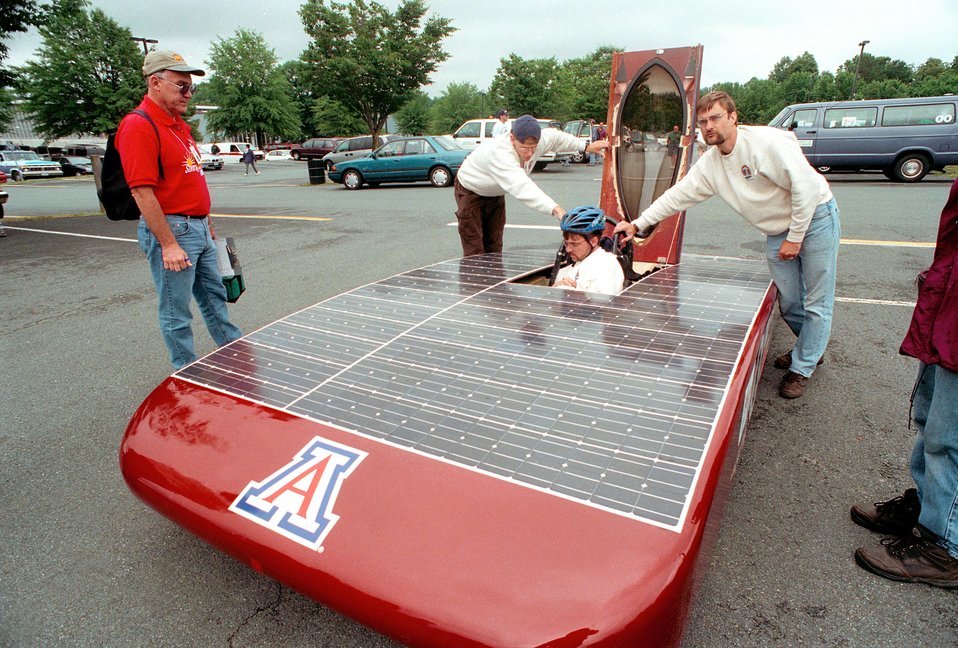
PREPARING FOR SUNRAYCE 1999.

SUNRAYCE 1999 STARTED IN WASHINGTON, DC, JUNE 20, 1999 AND WAS COMPLETED ON JUNE 29, 1999 AT DISNEY WORLD IN FLORIDA. DOE HELPS TO SPONSOR THE SUNRAYCE AS PART OF ITS COMMITMENT TO RESEARCH AND DEVELOPMENT OF CLEAN , COST EFFECTIVE, ENERGY EFFICIENT RENEWABLE ENERGY. THE SUNRAYCE BRINGS TOGETHER TEAMS OF STUDENTS FROM A WIDE RANGE OF DISCIPLINES, INCLUDING ENGINEERING, COMPUTER SCIENCE, PHYSICS, MARKETING AND GRAPHICS. STUDENTS MUST DESIGN, CONSTRUCT AND RACE THEIR SOLAR-POWERED VEHICLES, WITH FACULTY ACTING ONLY IN ADVISORY CAPACITY.